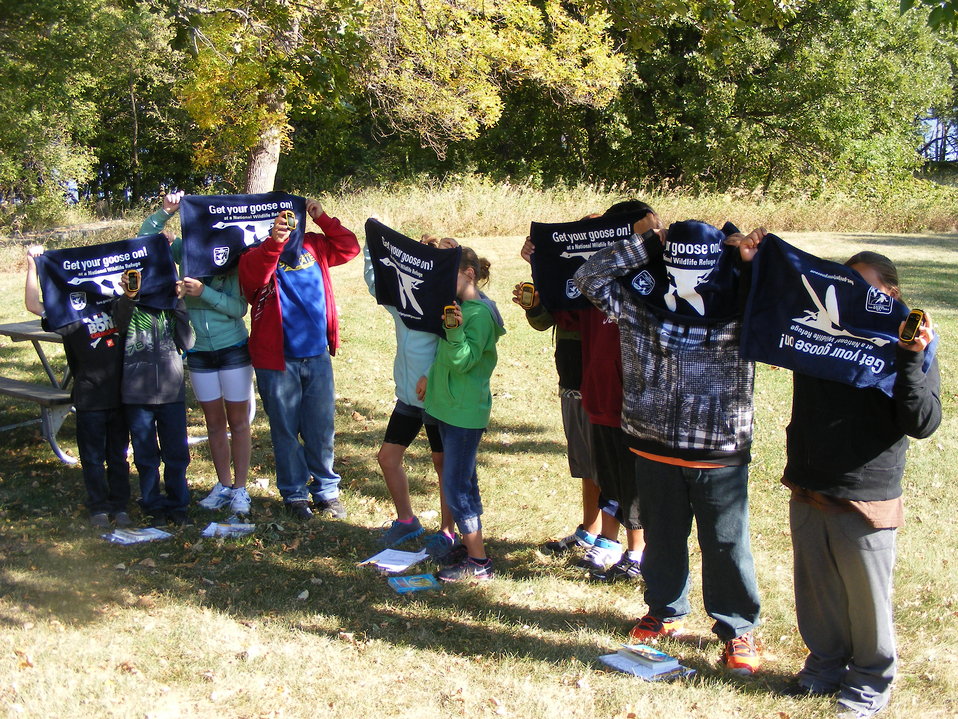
Get Your Goose On!

Youngsters participate in a birding hike at Waubay National Wildlife Refuge in South Dakota.